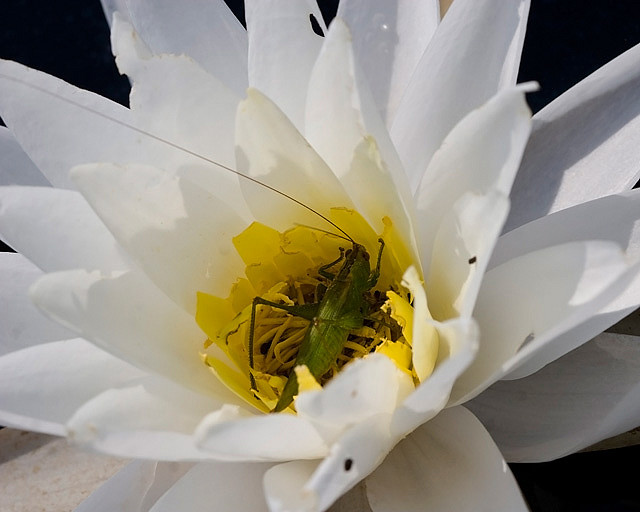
slender meadow katydid

Loxahatchee National Wildlife Refuge, FL